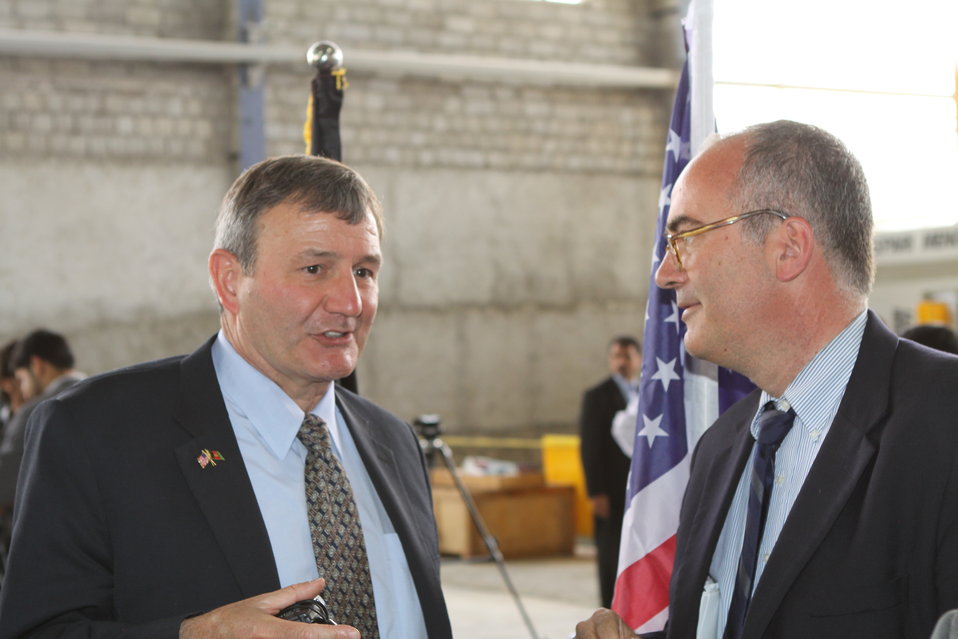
100525 Hirat Marble Conference 378